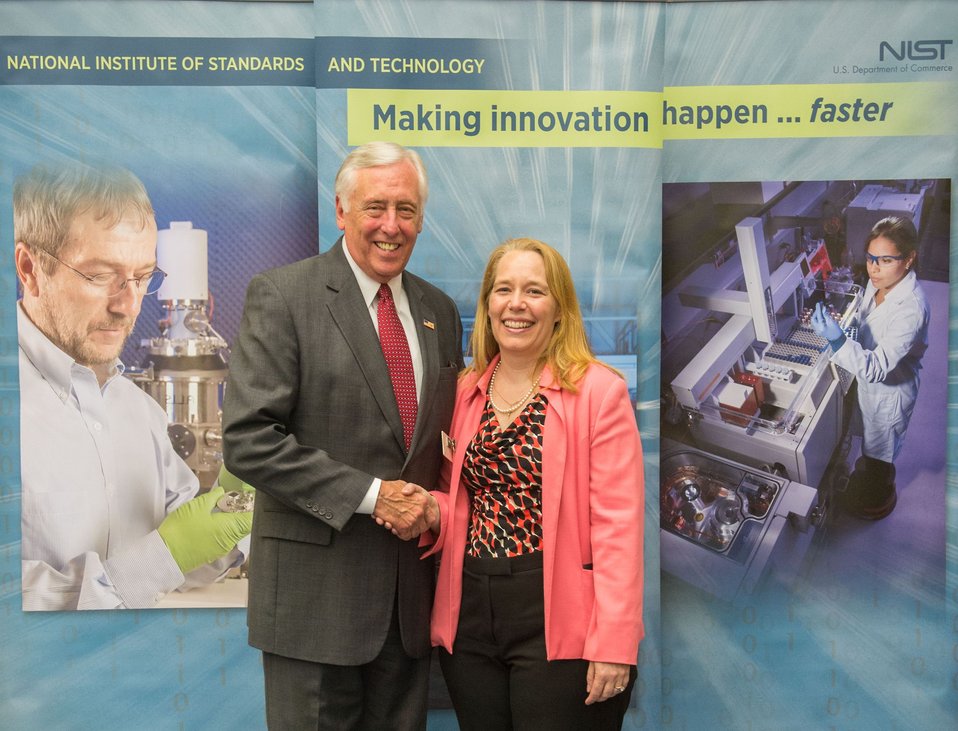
Congressman Hoyer and NIST Scientist Lisa Fronczek

Congressman Steny Hoyer, Dem. Maryland (left) congratulates NIST scientist, Lisa Fronczek (right) for her work as program leader for the Student Undergraduate Research Program.